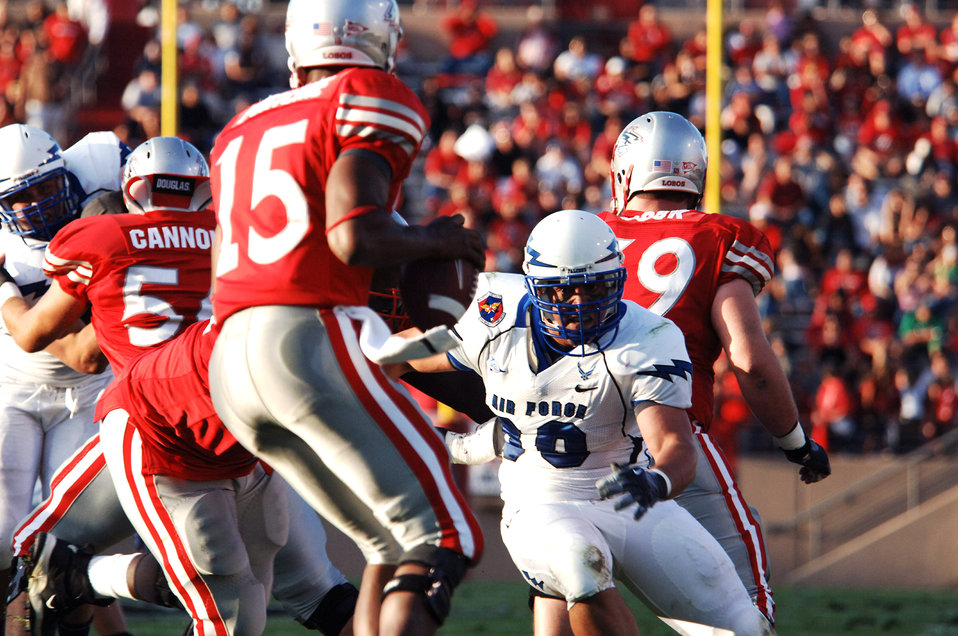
Football: Falcons feast on turnovers, down New Mexico 37-13

U.S. Air Force Academy defensive end Ryan Ricketts pressures New Mexico quarterback Donovan Porterie during football action Sept. 19, 2009, at Albuquerque, N.M.